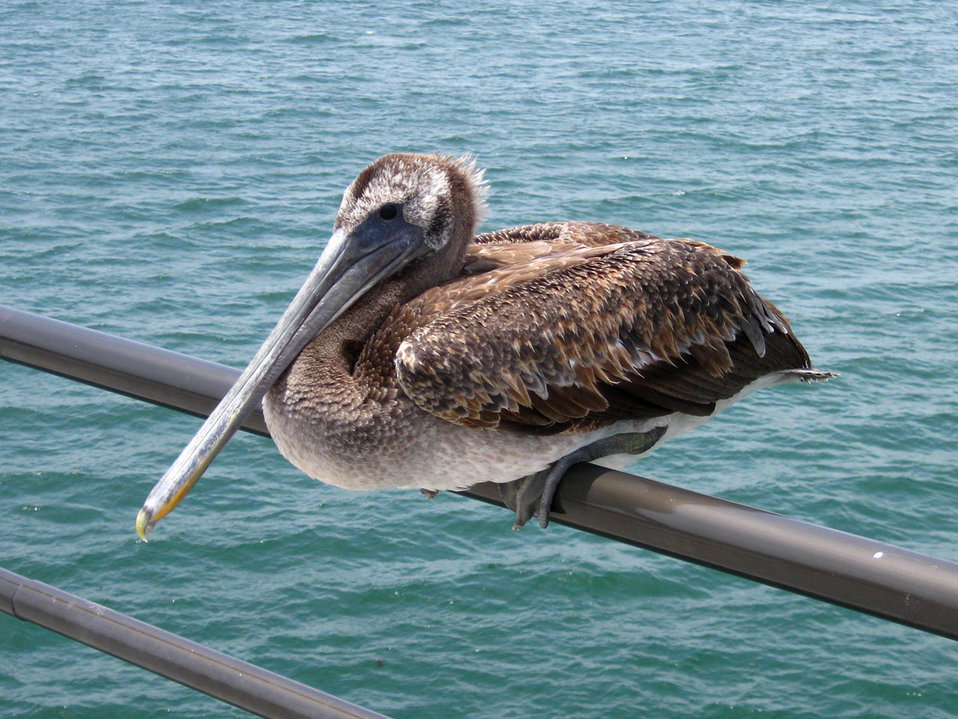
Pelican perched on a pier railing

A young pelican perches on the railing of huntington beach pier, huntington beach, ca.